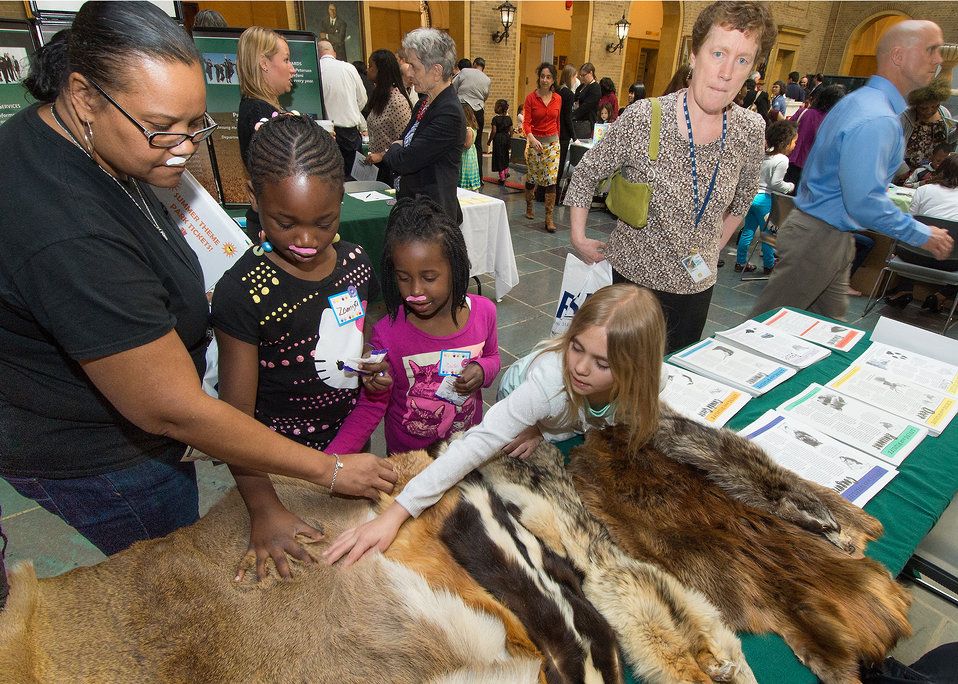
The U.S. Department of Agriculture (USDA) held its annual “Bring Your Daughters and Sons to Work on Thursday, Apr. 24, 2014 in Washington, D.C. The event offers employees the opportunity to bring their children to work to experience what they do in their profession and offer insight into other careers at the Department of Agriculture.